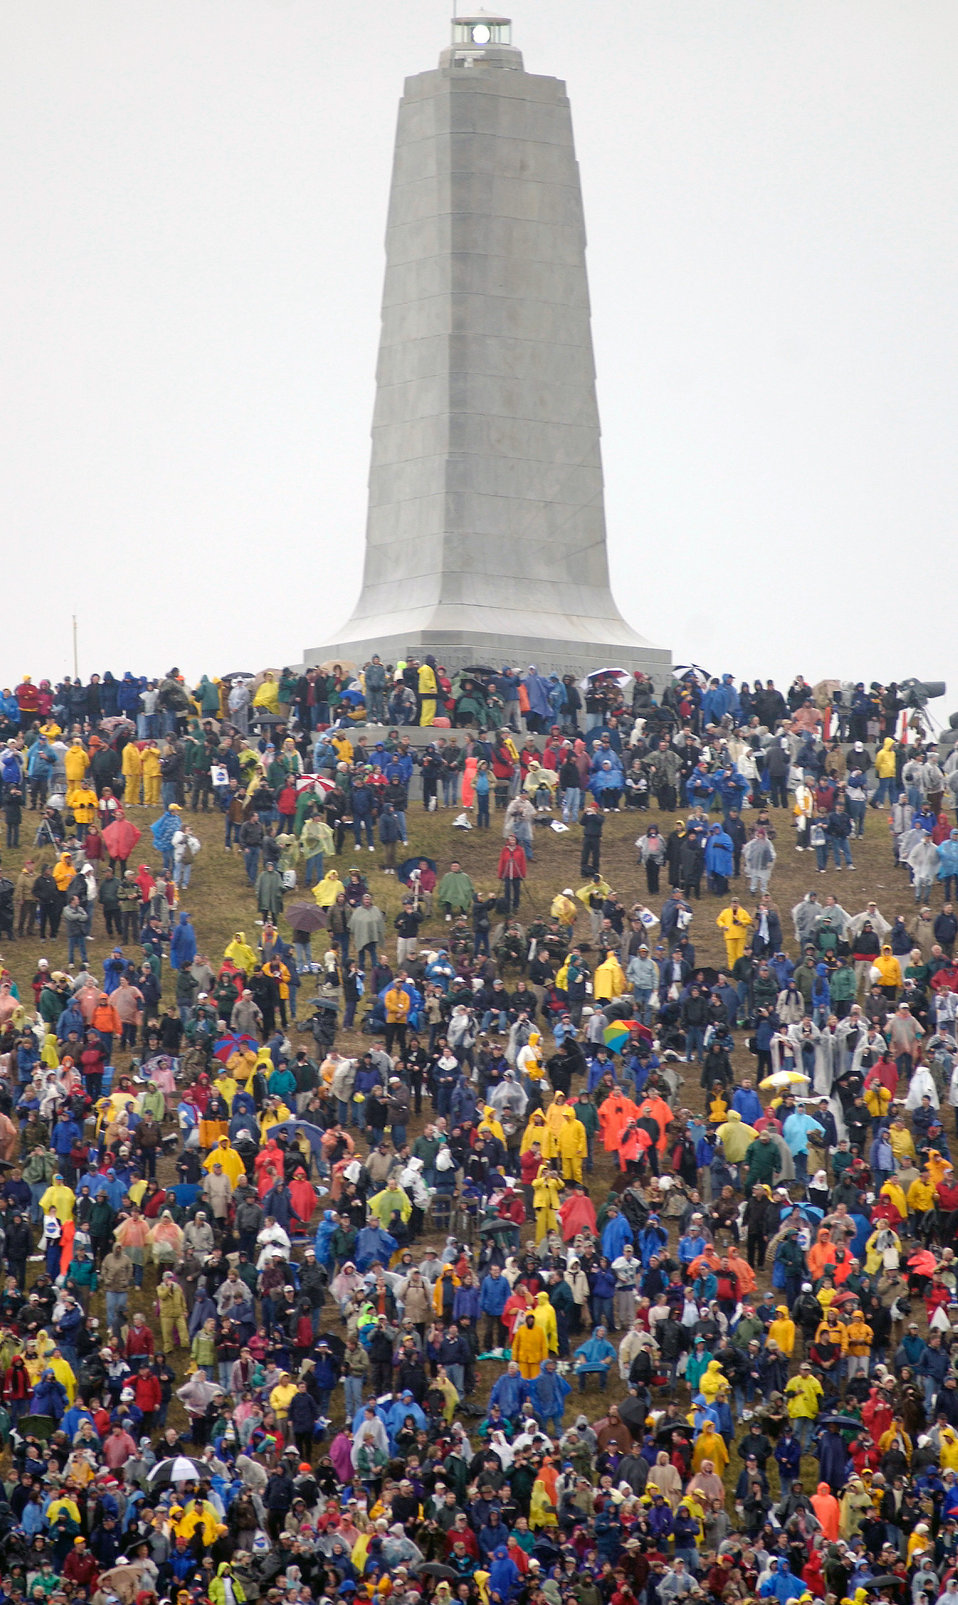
Centennial of Flight, Kitty Hawk, N.C.

KILL DEVIL HILLS, N.C. -- More than 34,000 aviation enthusiasts braved hours of bitter cold and drenching rains at the Wright Brothers National Memorial here Dec. 17 hoping to witness the 100th anniversary of the